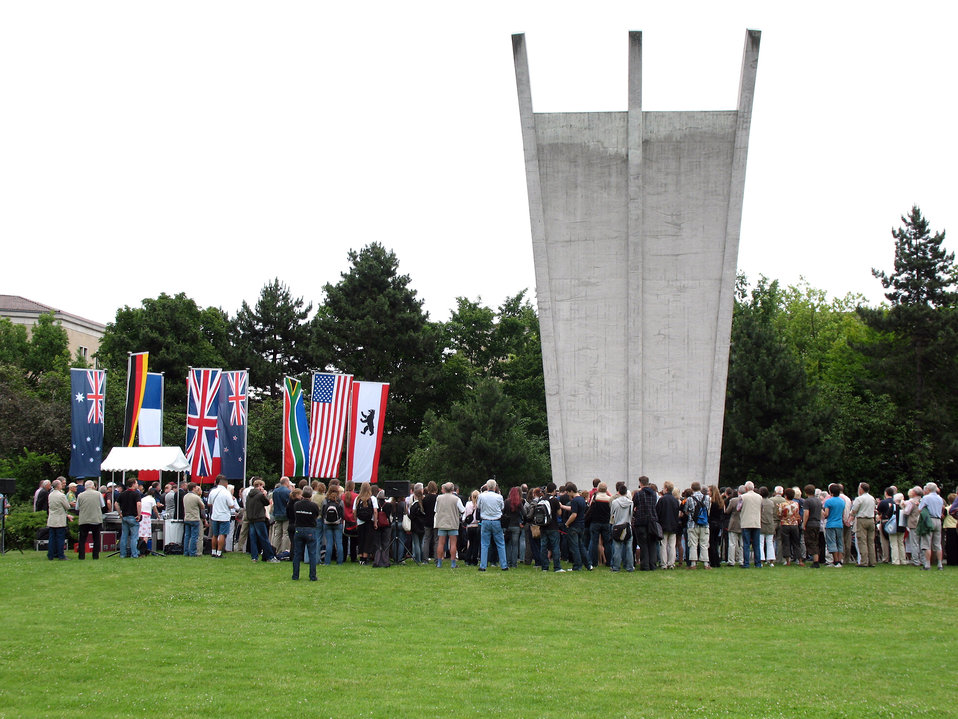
Remembering the Berlin Airlift

The Berlin Airlift Memorial stands just outside the former Tempelhof Military Air Base in Berlin. The memorial honors the 78 airmen who gave their lives during the Berlin Airlift. The campaign brought more than 2.3 million tons of food, medicine and supplies in more than 250,000 air missions to desperate Berliners.